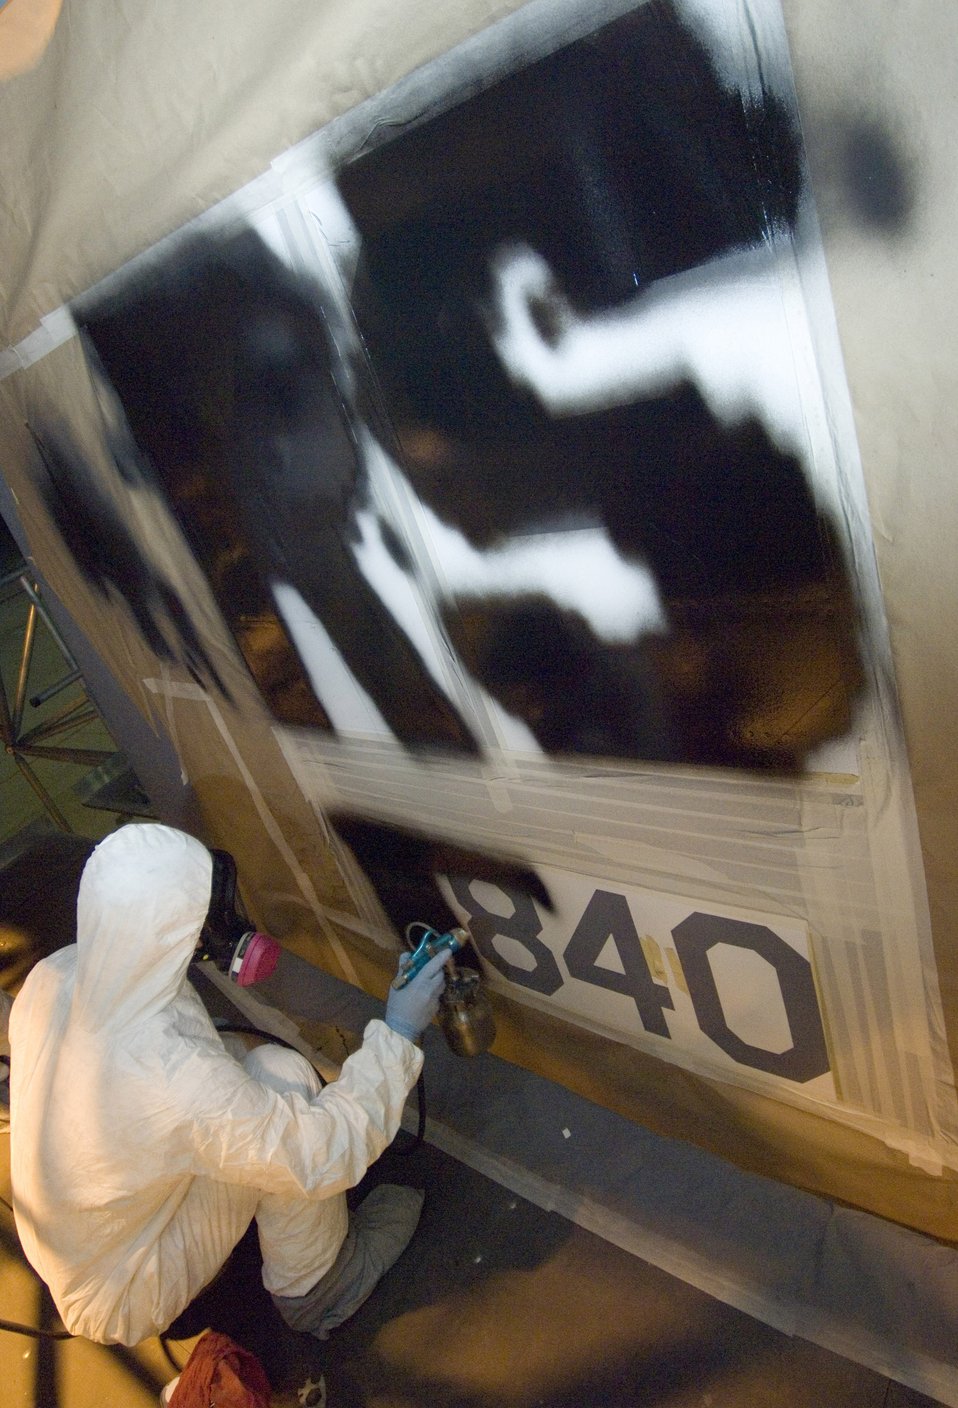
Telltale signs

Senior Airman Steve Essler spray paints the tail number on the tail of one of two C-130 Hercules on July 31 that have been assigned to the 37th Airlift Squadron at Ramstein Air Base, Germany. Airman Essler is an aircraft structural maintainer with the 86th Maintenance Squadron.